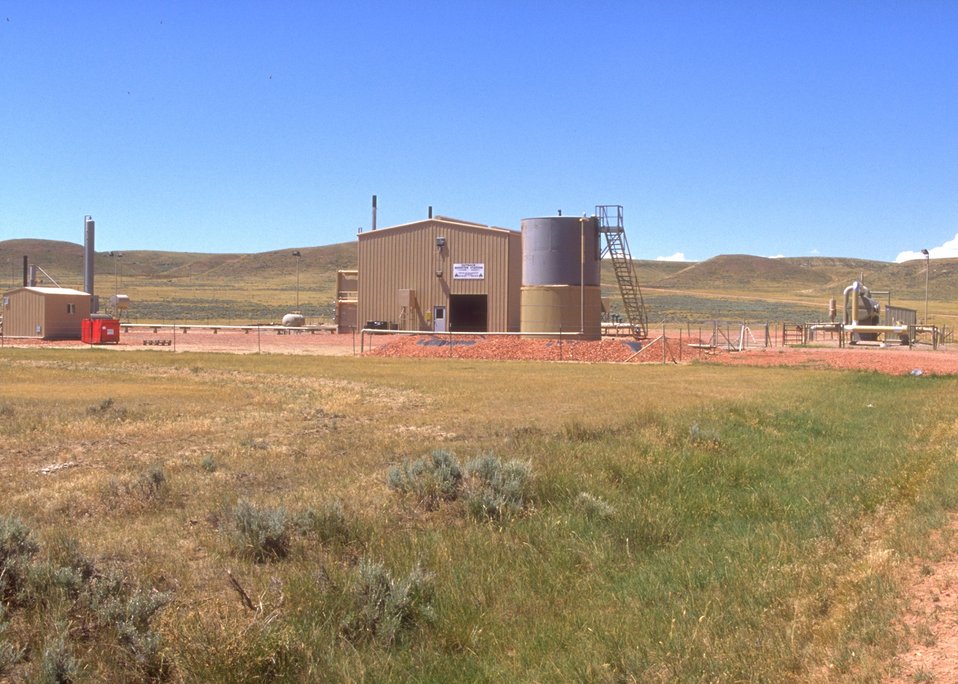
Facilities used in the production of coal bed methane, Buffalo Field Office.